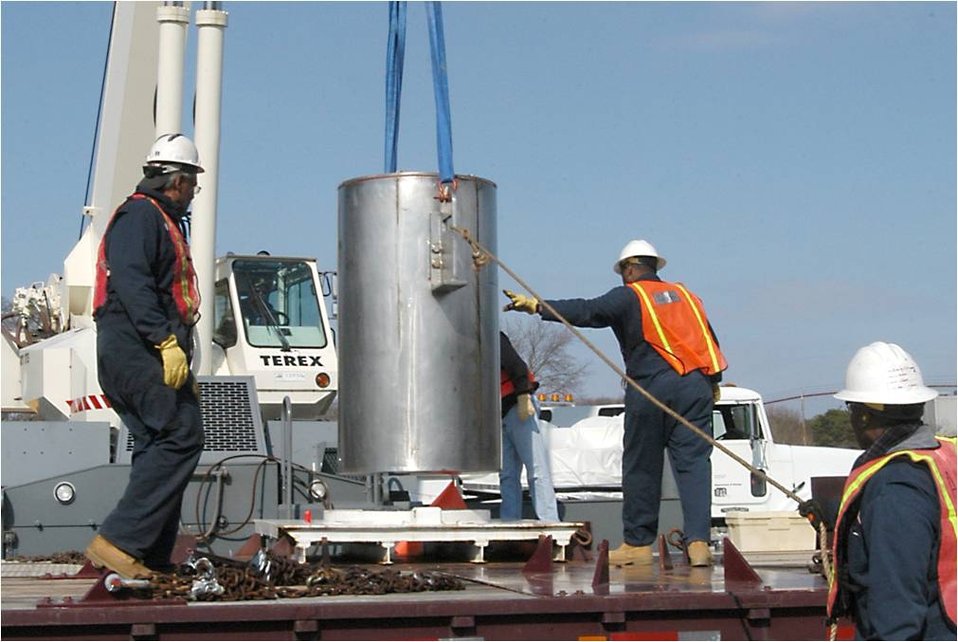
Moving Shipping Cask